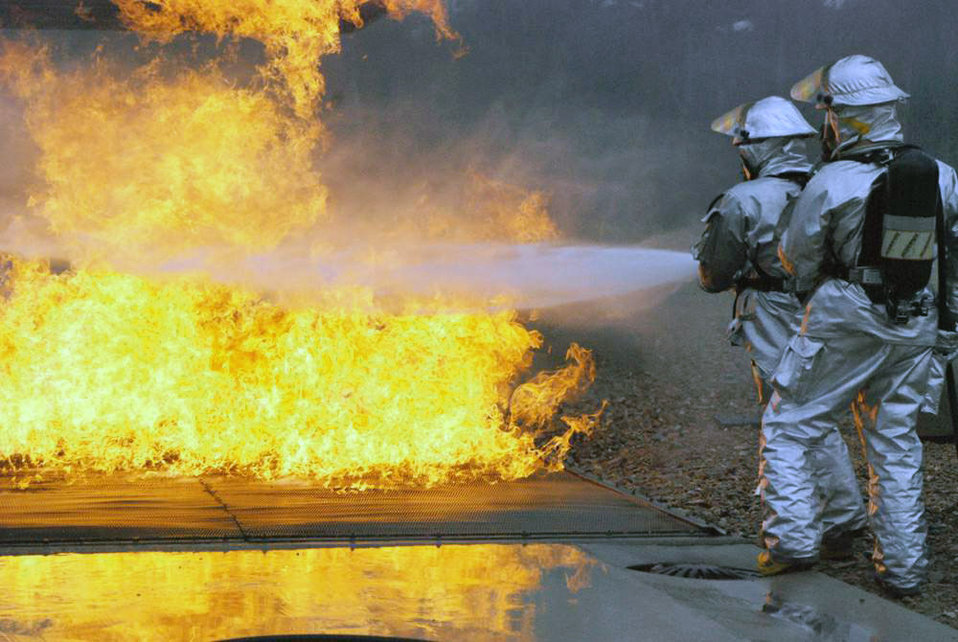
Dutch, U.S. air forces unite for training

Airmen extinguish a flare up below an aircraft's wing during a training exercise at the Woensdrecht Firefighting Training Facility in the Netherlands. Members of the 309th Airlift Squadron from Chievres Air Base, Belgium, trained on firefighting techniques at the simulator.